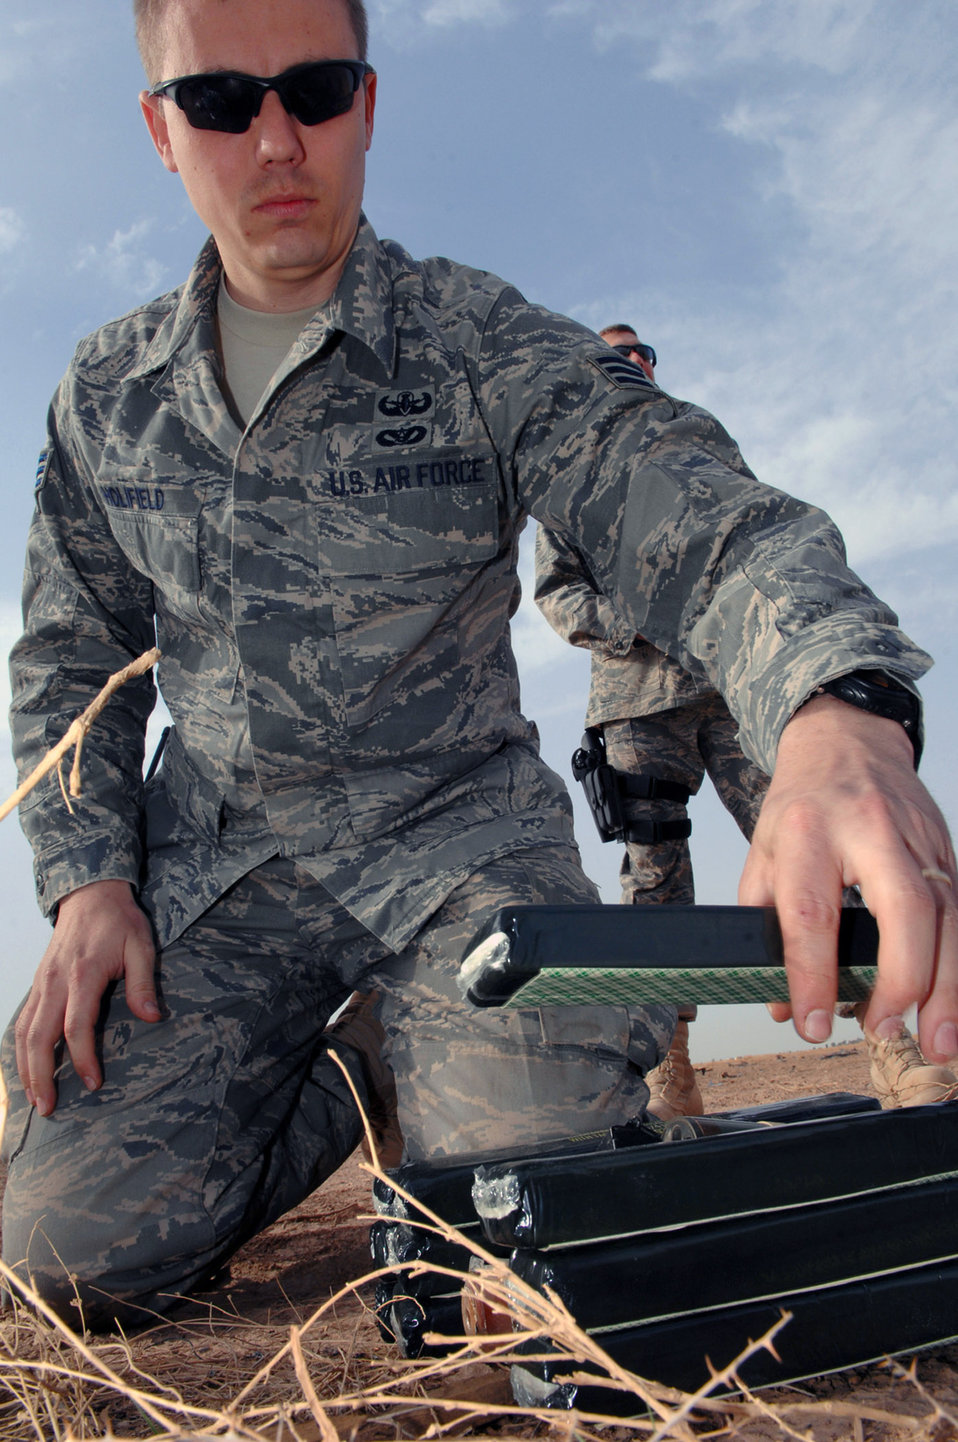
Blast off

Senior Airman Stephen Holifield places C-4, an explosive substance, on top of unexploded ordnances to create a controlled detonation March 13 at Balad Air Base, Iraq. Unexploded ordnances that have been collected from indirect fire attacks must be blown up to prevent them from reentering opposing forces' hands. Airman Holifield is a 332nd Expeditionary Civil Engineer Squadron explosive ordnance disposal technician deployed from Hurlburt Field, Fla.